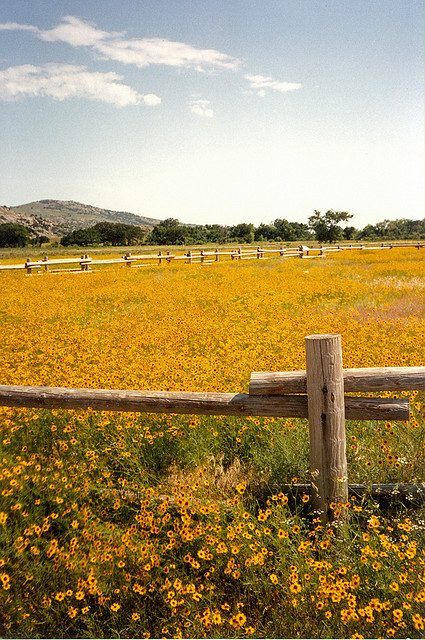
June wildflowers

Wichita Mountains National Wildlife Refuge